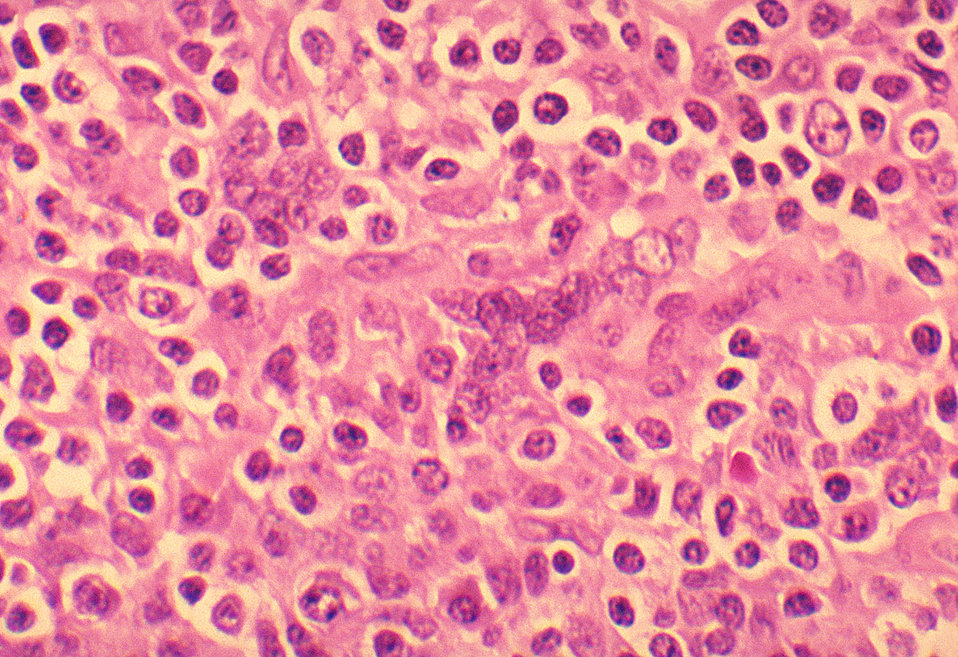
Histopathology of lymphadenopathy due to HIV-1 infection. Multinucleated cells.